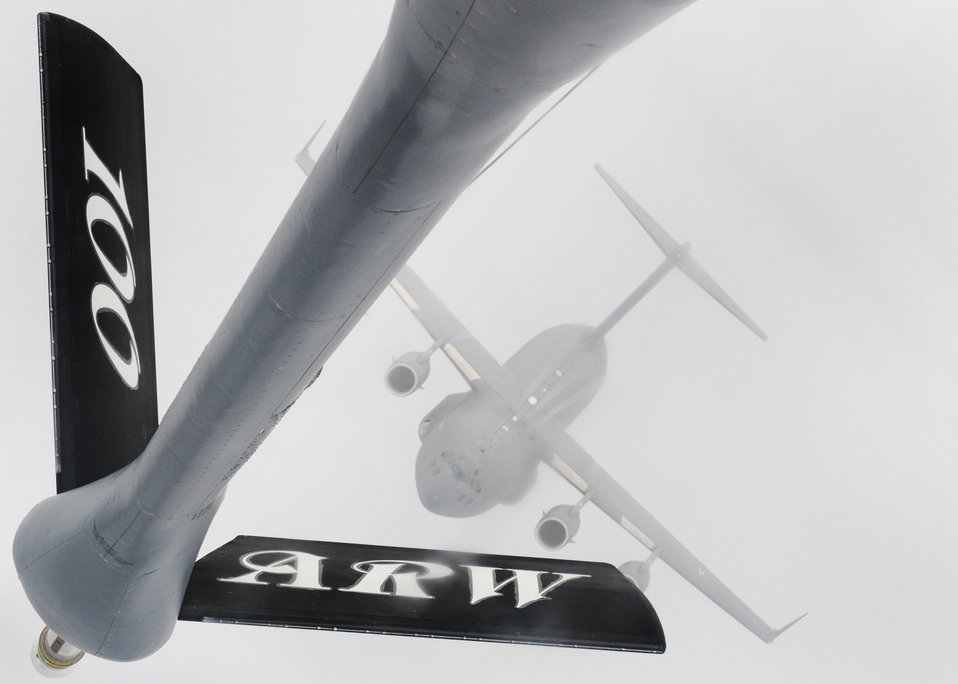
Ghostly fueling

A C-17 Globemaster III approaches a KC-135 Stratotanker boom over Germany Nov. 12, 2010, during a training mission. The C-17 is with the Heavy Airlift Wing at Papa Air Base, Hungary, and the KC-135 is from the 100th Air Refueling Wing at Royal Air Force Mildenhall, England.